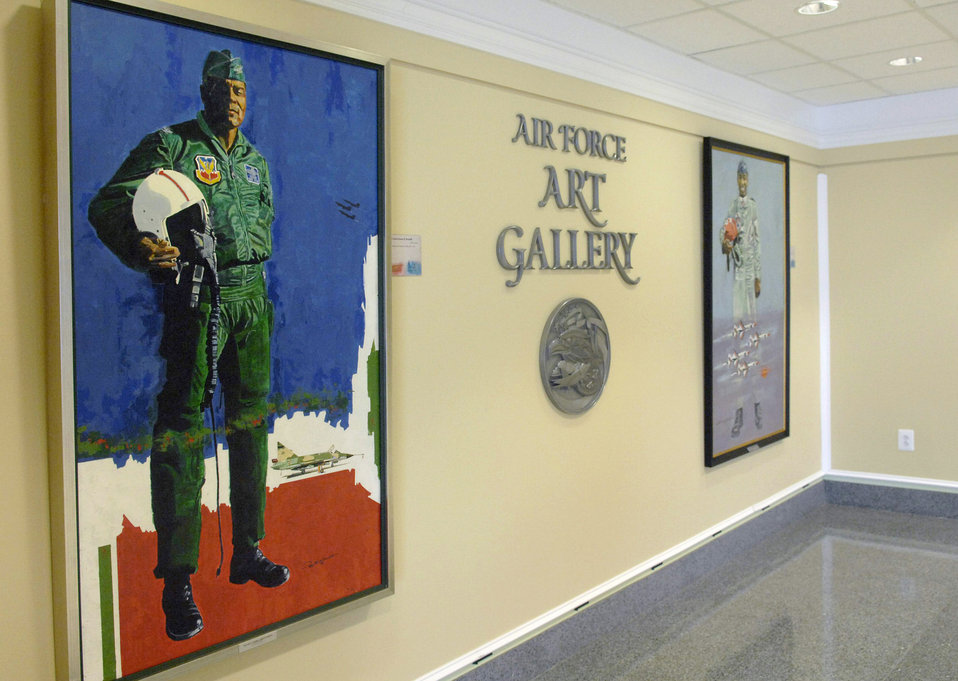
Roy LaGrone's artwork on display